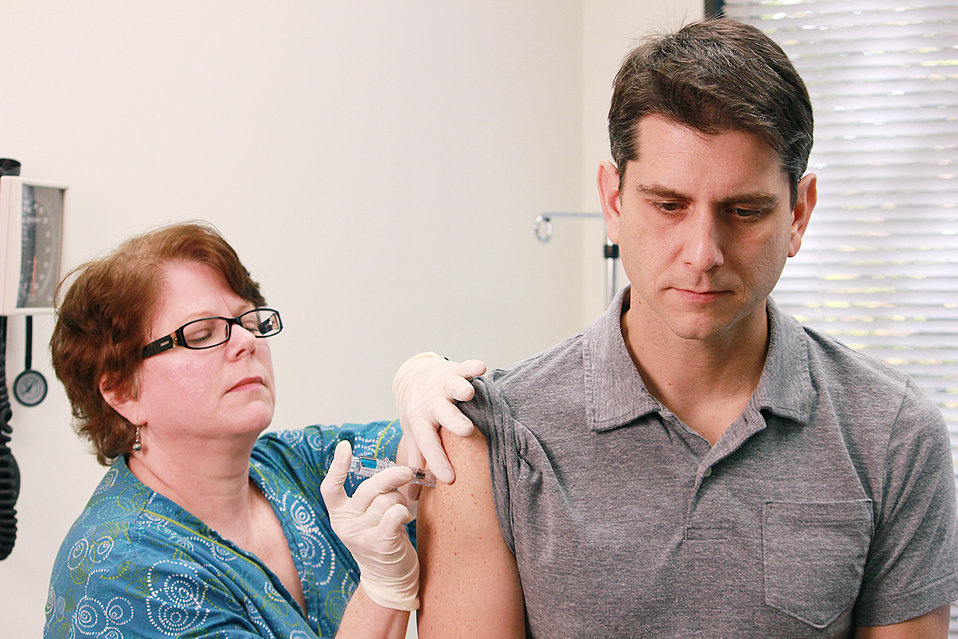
Taken inside a clinical setting, this qualified nurse, after having sterilized the injection site, was in the process of properly-administering a dose of Fluzone� intradermal influenza virus vaccine. Here, the nurse was delivering the vaccine to the patient's right shoulder region.